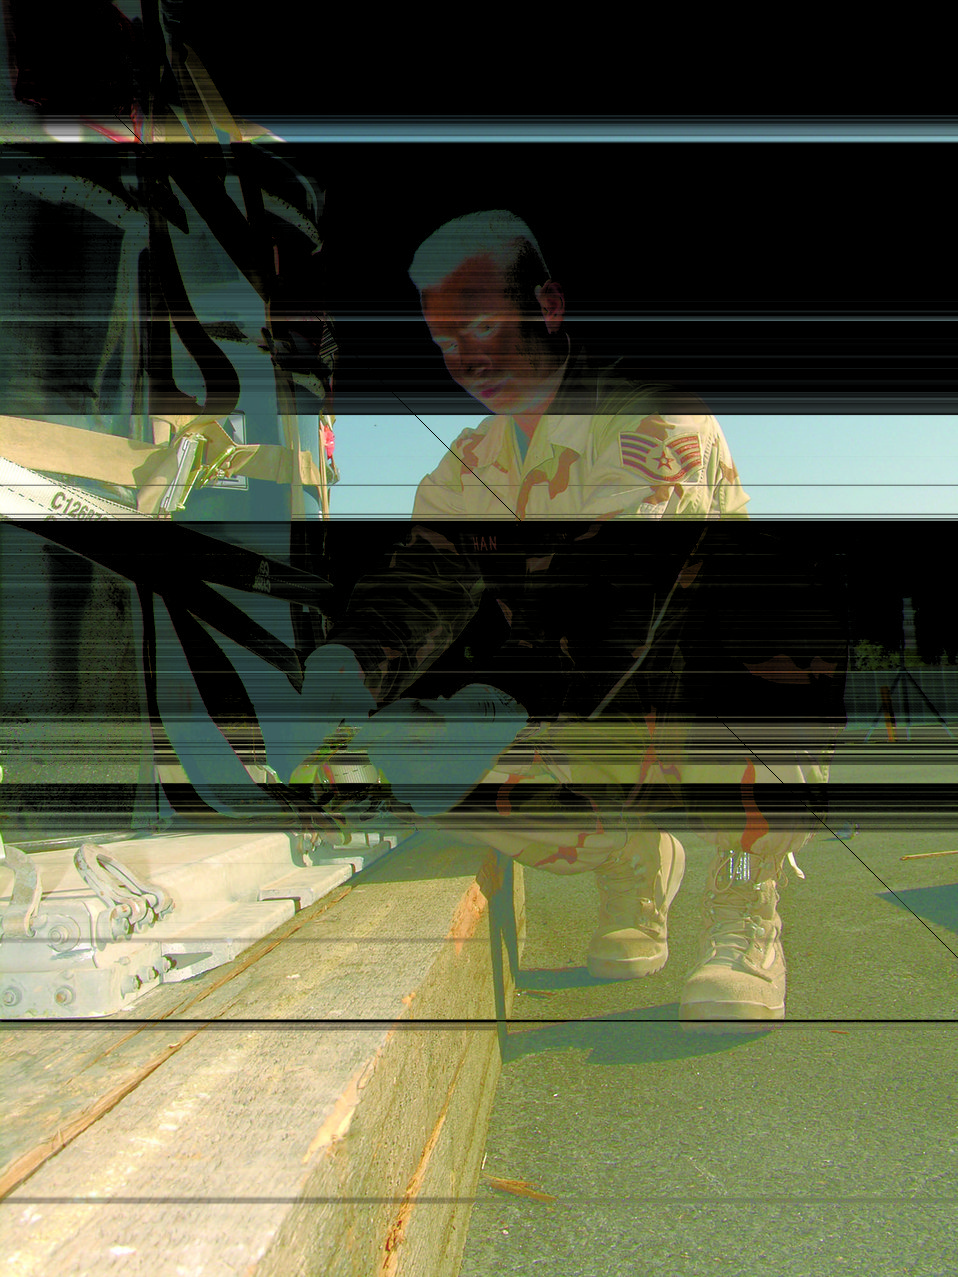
It's a strap

MANAS AIR BASE, Kyrgyz Republic -- Staff Sgt. Rafick Khan tightens a cargo strap securing 55-gallon barrels to a pallet. He is the noncommissioned officer in charge of the 376th Expeditionary Logistics Readiness Squadron's air terminal operations center. Sergeant Kahn is deployed here from McGuire Air Force Base, N.J. In less than two weeks, the center's 24-person team moved 3,323 passengers and 133 tons of cargo on 143 missions.